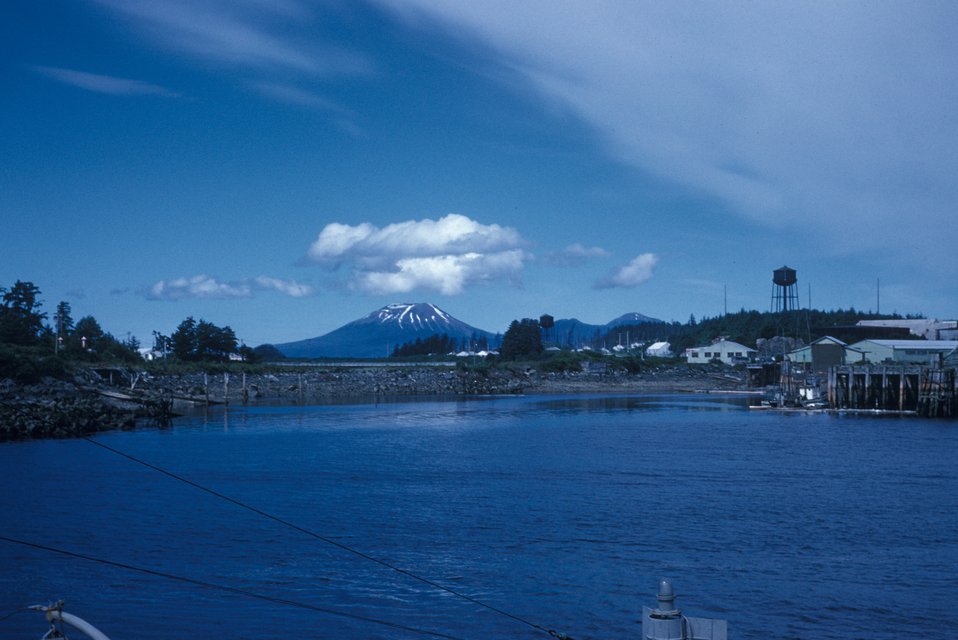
A view of Mount Edgecumbe.